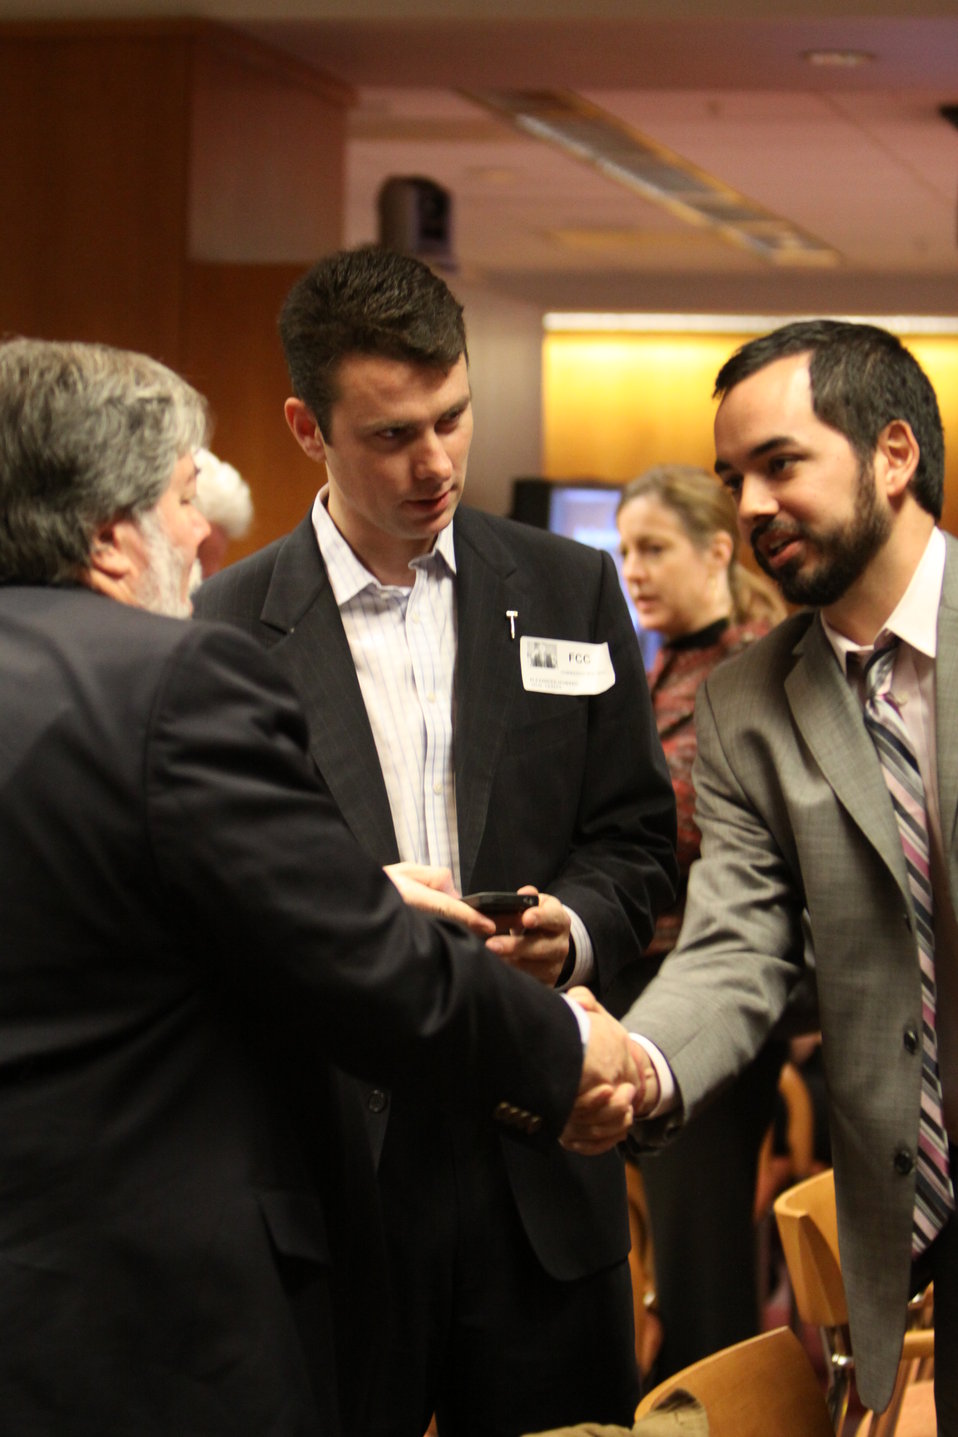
Dan McSwain, FCC New Media with Apple Co-Founder Steve Wozniak and O’Reilly Media Correspondent Alex Howard